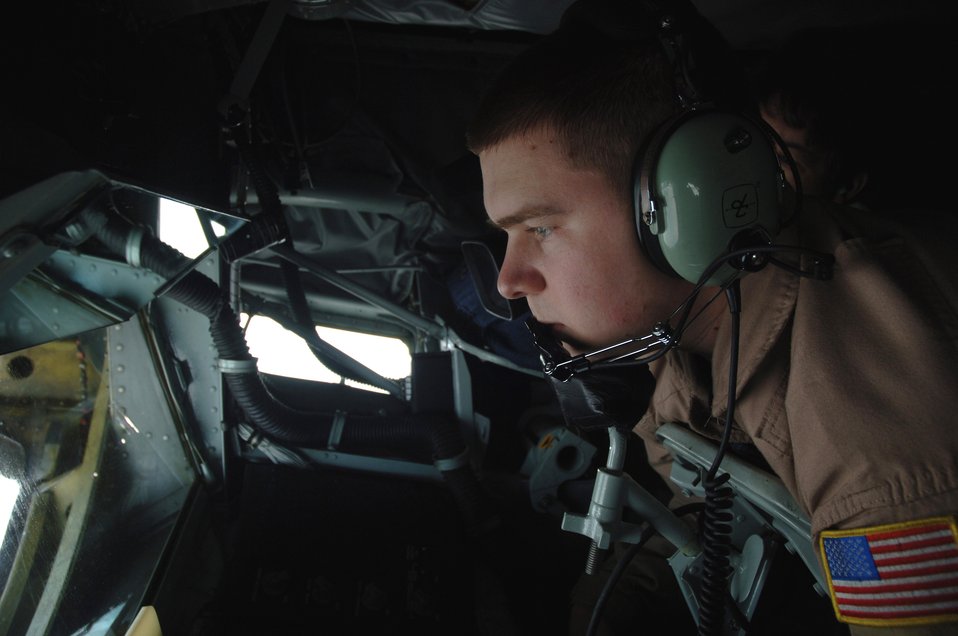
A view to a refuel

Senior Airman Ryan Seifert refuels an F-15E Strike Eagle during a refueling mission over Southwest Asia on Tuesday, April 11, 2006. The KC-135 Stratotanker is from Fairchild Air Force Base, Wash. Airman Seifert is a boom operator with the 340th Expeditionary Air Refueling Squadron.